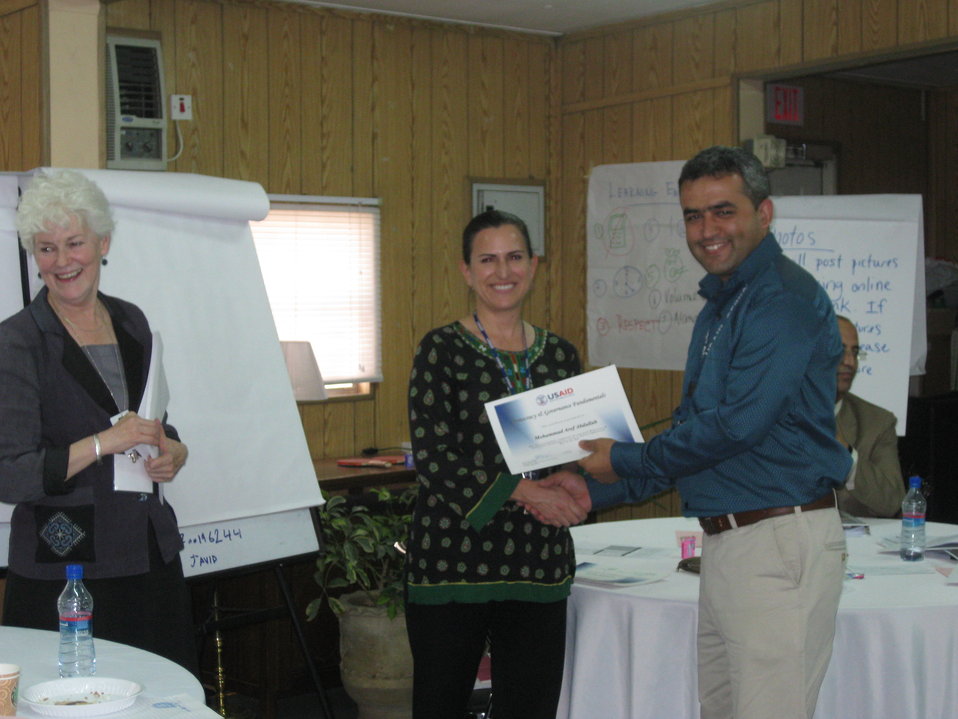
Afghan Youth Voices 055